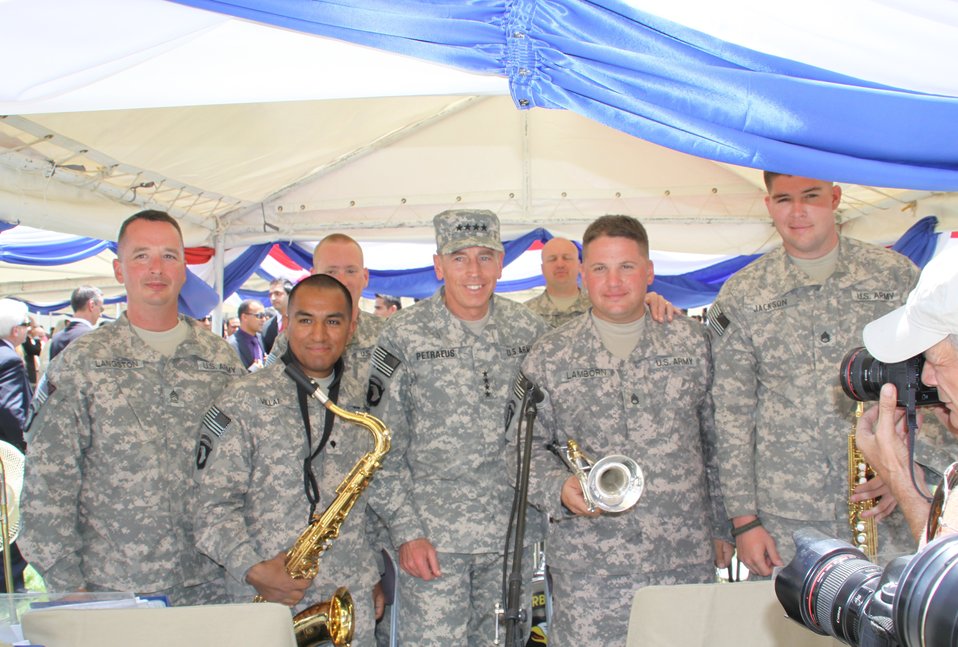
Kabul Official July 4th Celebration